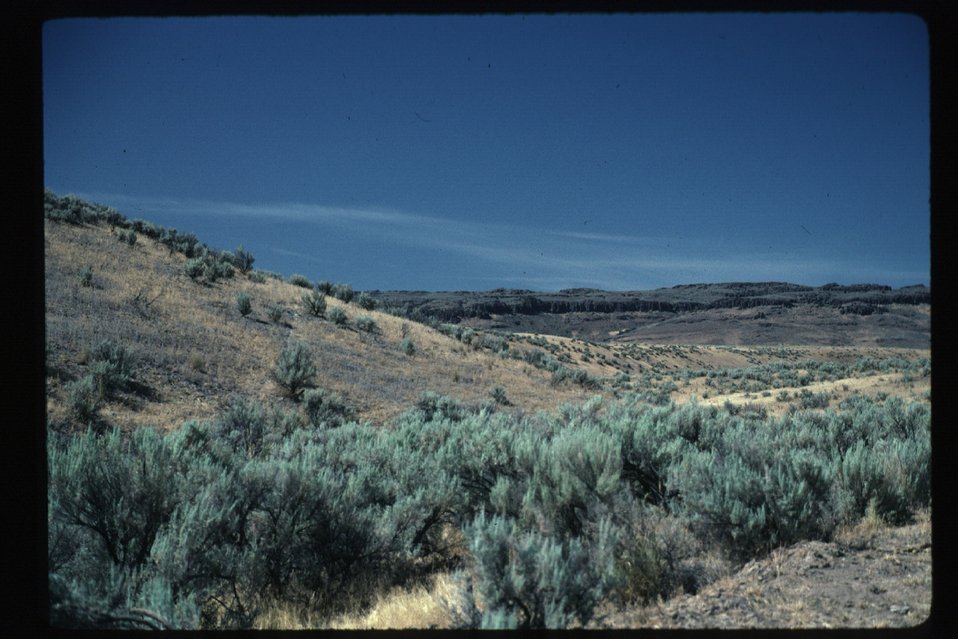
Rangeland Brush and grass Four Rivers Field Office LSRD Lower Snake River District